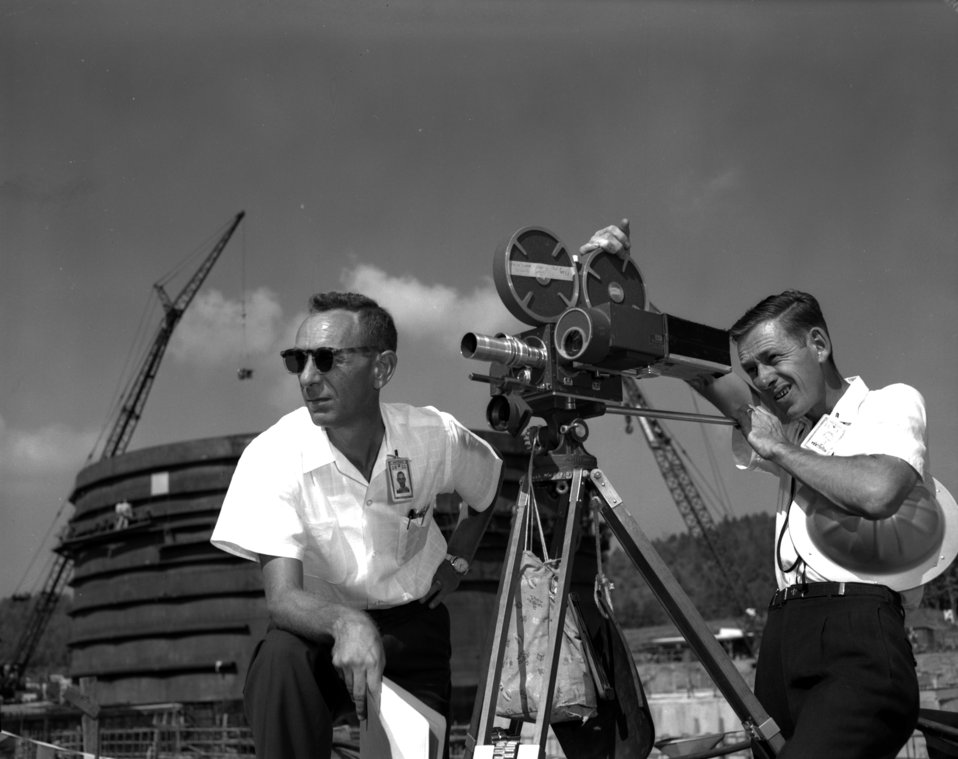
J.E. Westcott and E.E. Stokely at EGCR Oak Ridge

60-0949a DOE photo by T.R. Cook J.E. Westcott and E.E. Stokely at EGCR publicity shot for ORO film Oak Ridge Tennessee 9/20/1960